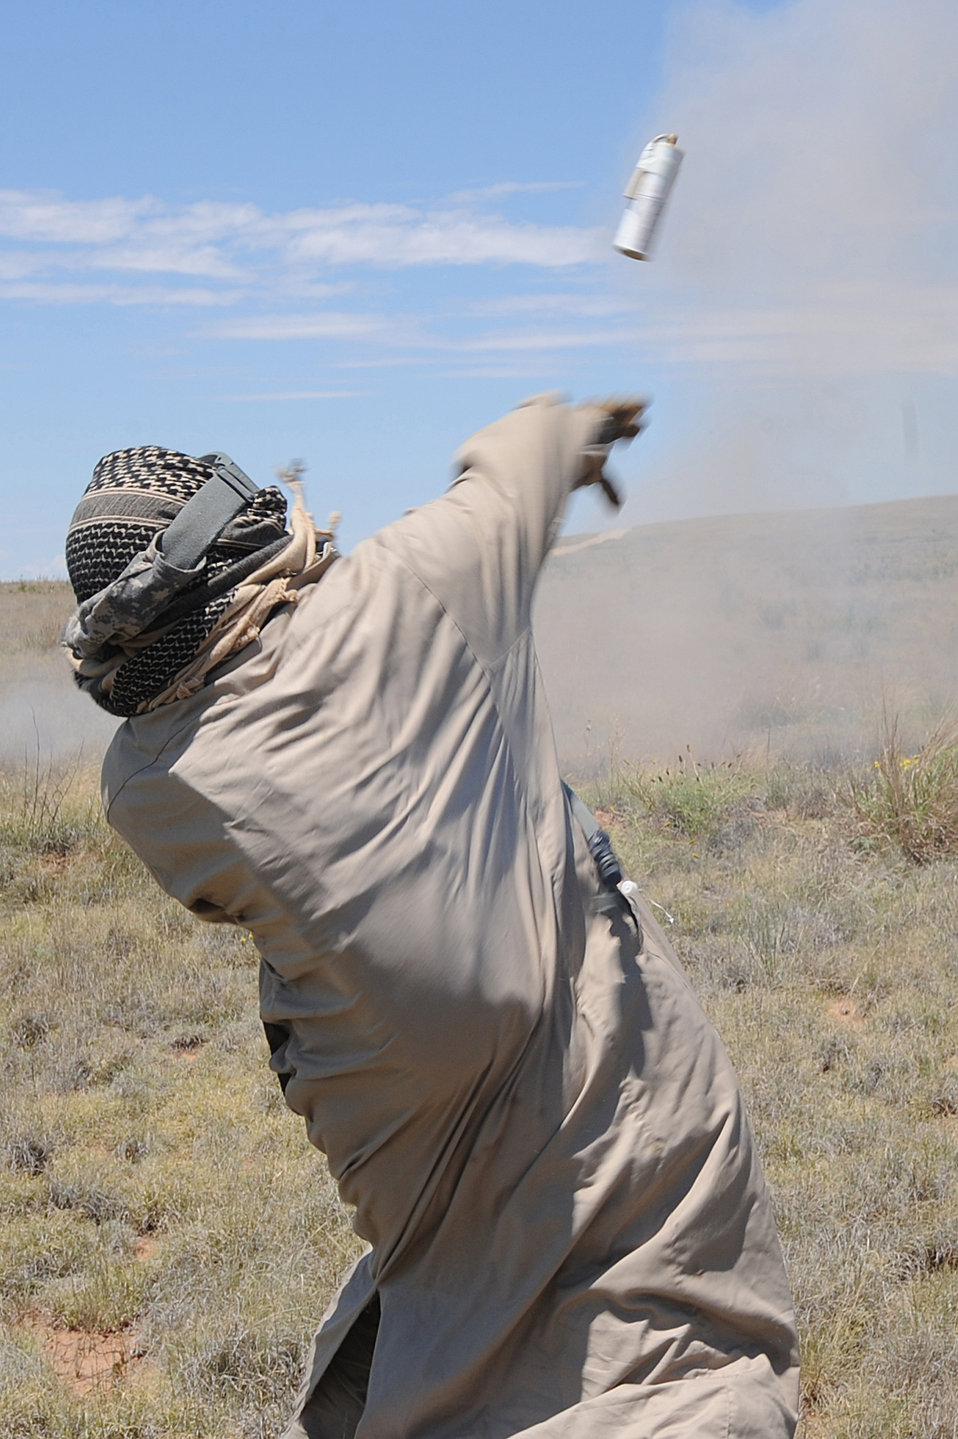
Cannon capabilities exercise

Buddy Gurnari throws a ground burst simulator towards friendly forces as part of a capabilities exercise June 26, 2010, at Cannon Air Force Base, N.M. Mr. Gurnari is assigned to the 27th Special Operations Support Squadron.